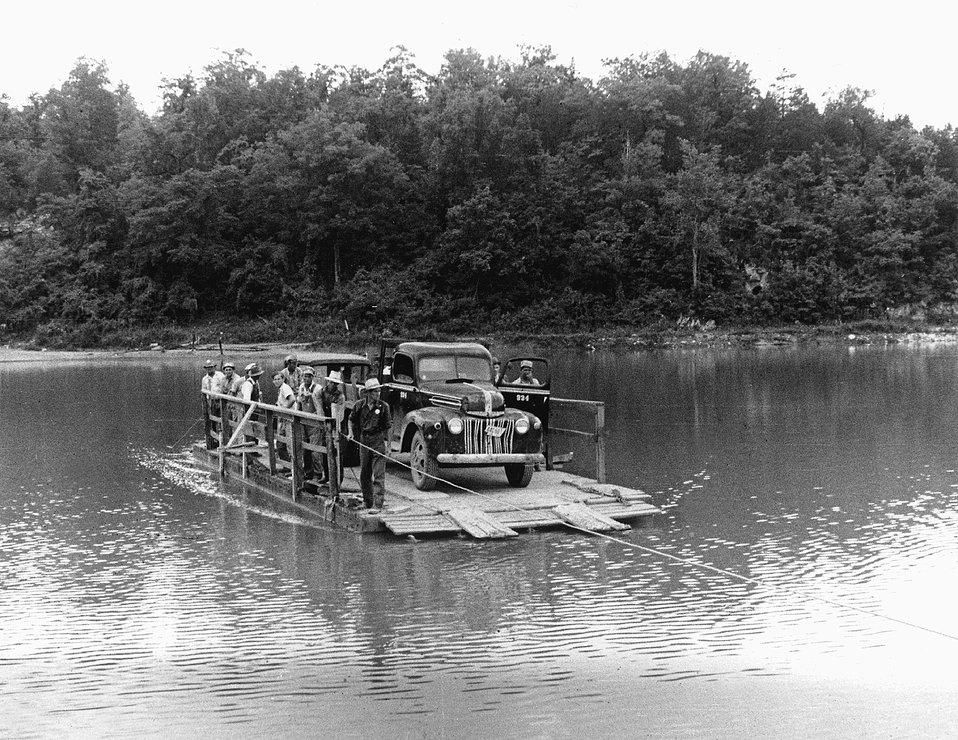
Employees of the Manhattan Engineer District cross the Clinch River on the hand-pulled Gallaher Ferry in June 1943.